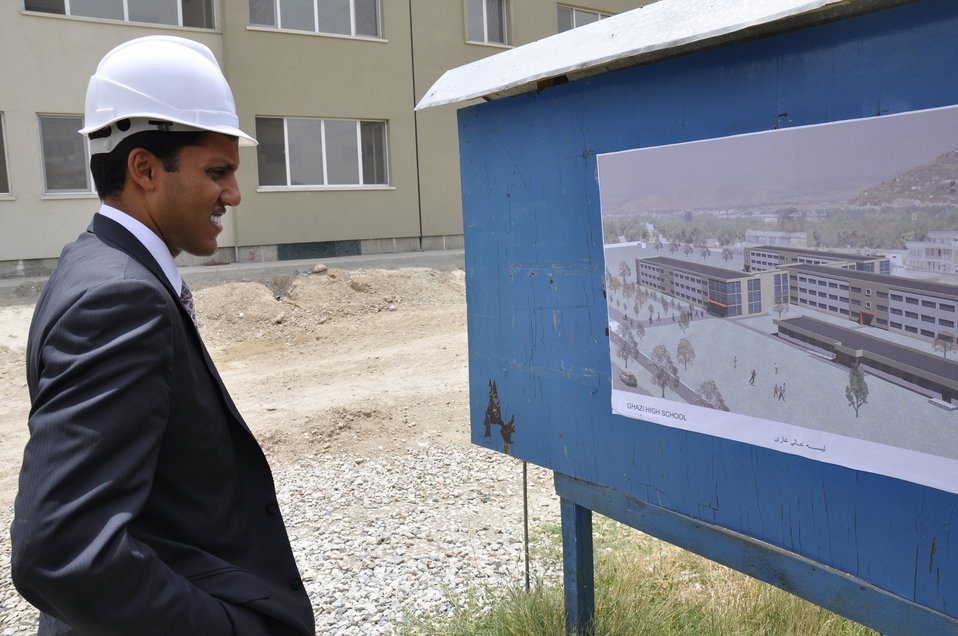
Ghazni High School in Kabul